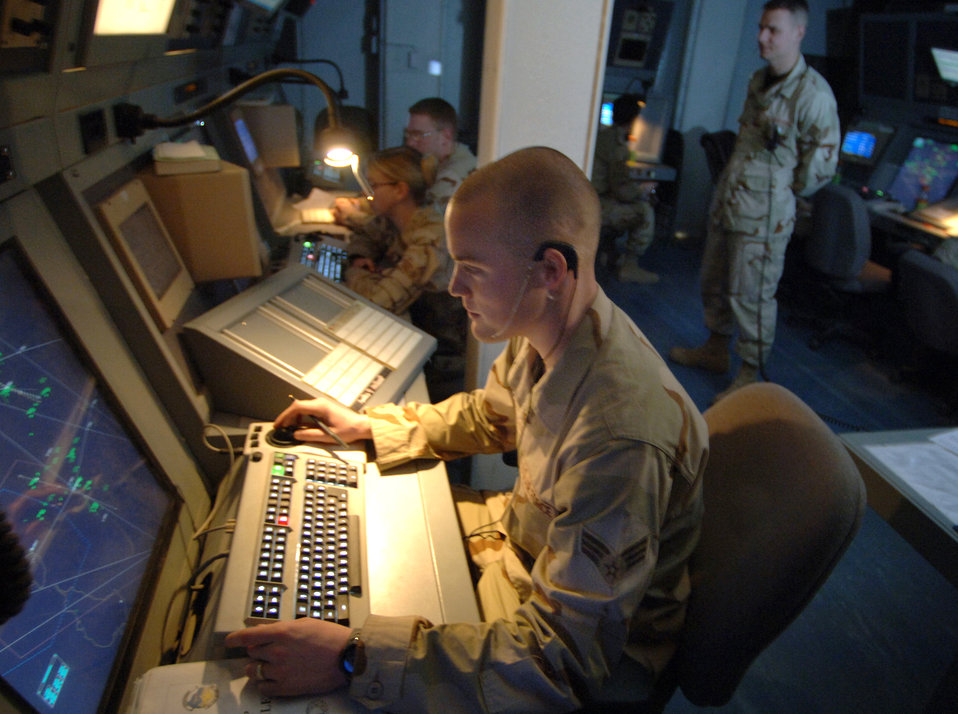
Operation Iraqi Freedom

BALAD AIR BASE, Iraq - Senior Airman Frank Gilman, 332nd Expeditionary Operations Support Squadron, air traffic controller, works the Balad Center Scope position at the Combined Enroute Radar Approach Control (CERAP) facility here, under the watchful eyes of Staff Sgt. Matthew Sandner, watch supervisor in charge of daily operations. Vital to the air traffic control team at Balad are the 38 air traffic controllers at the CERAP who work about 75,000 miles of Iraqi airspace.